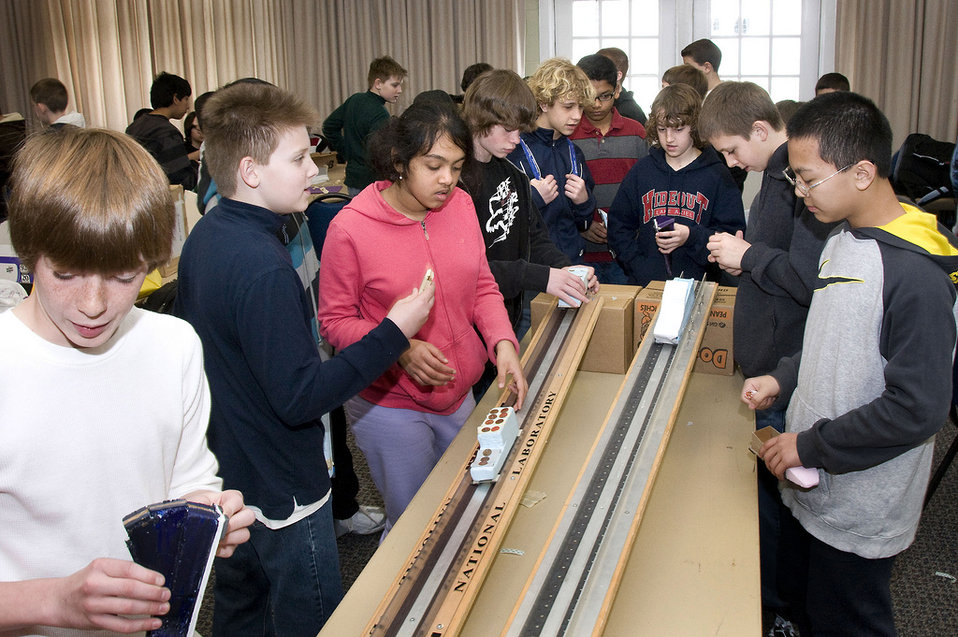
Students test their cars at the Maglev Contest AT Brookhaven National Laboratory.